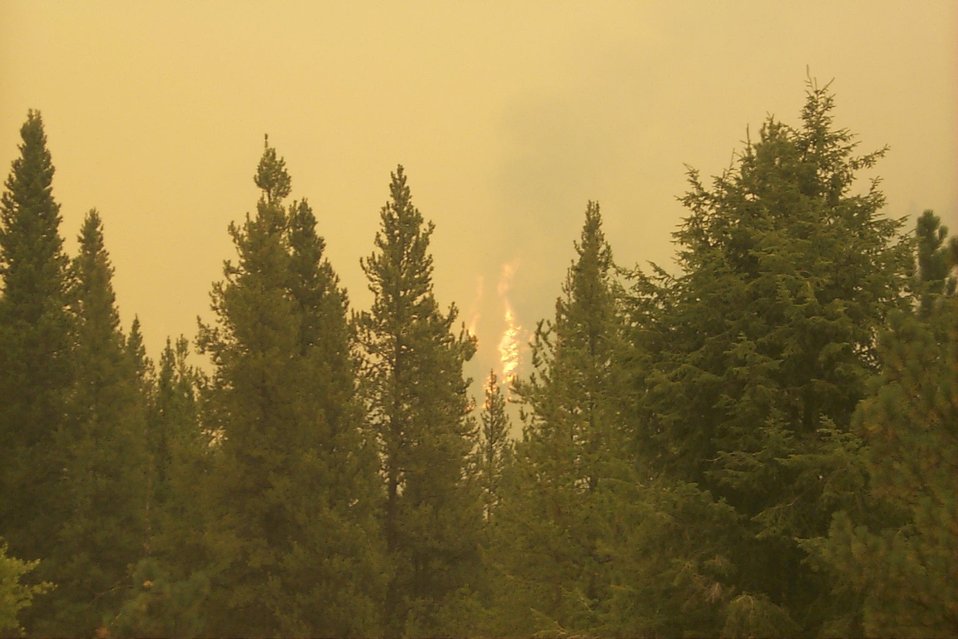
Fire Clearwater Fire Salmon Field Office USRD Upper Snake River District